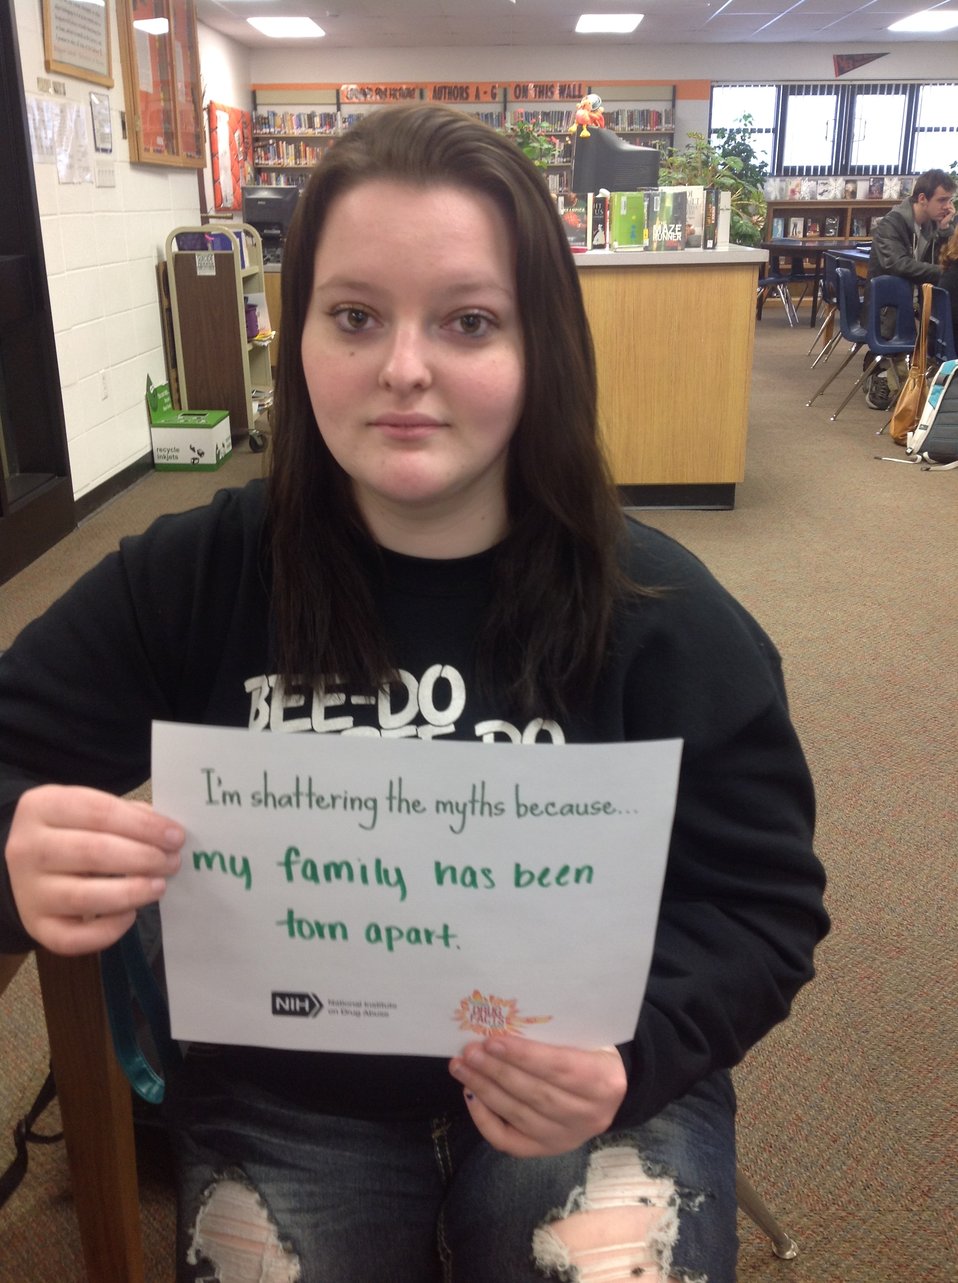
I'm Shattering the Myths Because...

Teenagers from the Van Buren County SAFE Coalition's, Youth Leadership Council (YLC) in Keosauqua, Iowa participate in various events during National Drug Facts Week, 2014.